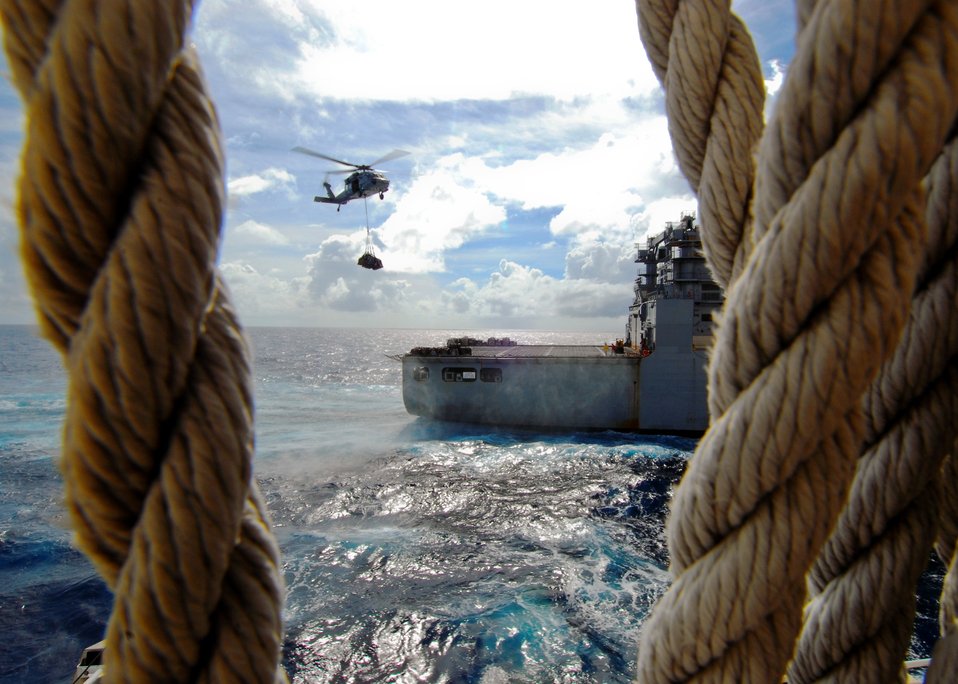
An MH-60S Knighthawk Helicopter Conducts a Vertical Replenishment (VERTREP) With Dry Cargo/ Ammunition Ship USNS Richard E. Byrd (T-AKE 4)

An MH-60S Knighthawk helicopter from Helicopter Sea Combat Squadron 23 “Wild Cards”, embarked aboard the Military Sealift Command hospital ship USNS Mercy (T-AH 19), conducts a vertical replenishment (VERTREP) with Dry Cargo/ Ammunition Ship USNS Richard E. Byrd (T-AKE 4) on July 11, 2010. Mercy is conducting Pacific Partnership 2010, the fifth in a series of annual U.S. Pacific Fleet humanitarian and civic assistance endeavors to strengthen regional partnerships.